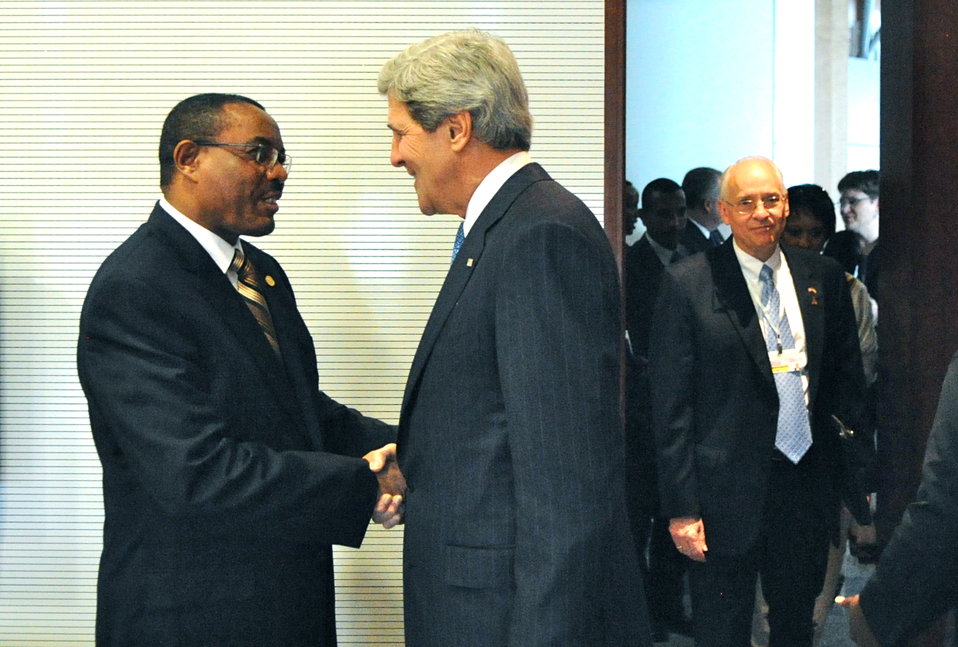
Secretary Kerry Meets With Ethiopian Prime Minister Dessalegn

U.S. Secretary of State John Kerry shakes hands with Ethiopian Prime Minister Hailemariam Dessalegn as they both attend the 50th anniversary African Union Summit in Addis Ababa, Ethiopia, on May 25, 2013.